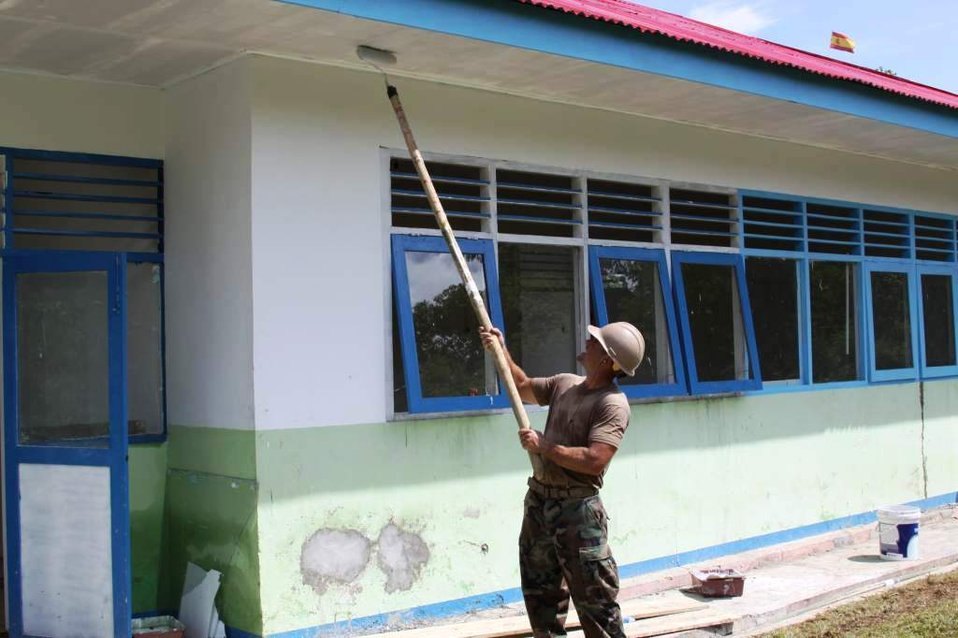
Utilitiesman 2nd Class Jacob Simino Paints the Exterior of the In-Patient Ward of the Daruba Hospital Engineering Site

Utilitiesman 2nd Class Jacob Simino, assigned to Naval Mobile Construction Battalion (NMCB) 11 out of Gulfport, Mississippi, paints the exterior of the in-patient ward of the Daruba Hospital engineering site on July 12, 2010, in Morotai, Indonesia. The engineering project is part of Pacific Partnership 2010, the fifth in a series of annual U.S. Pacific Fleet humanitarian and civic assistance endeavors to strengthen regional partnerships.